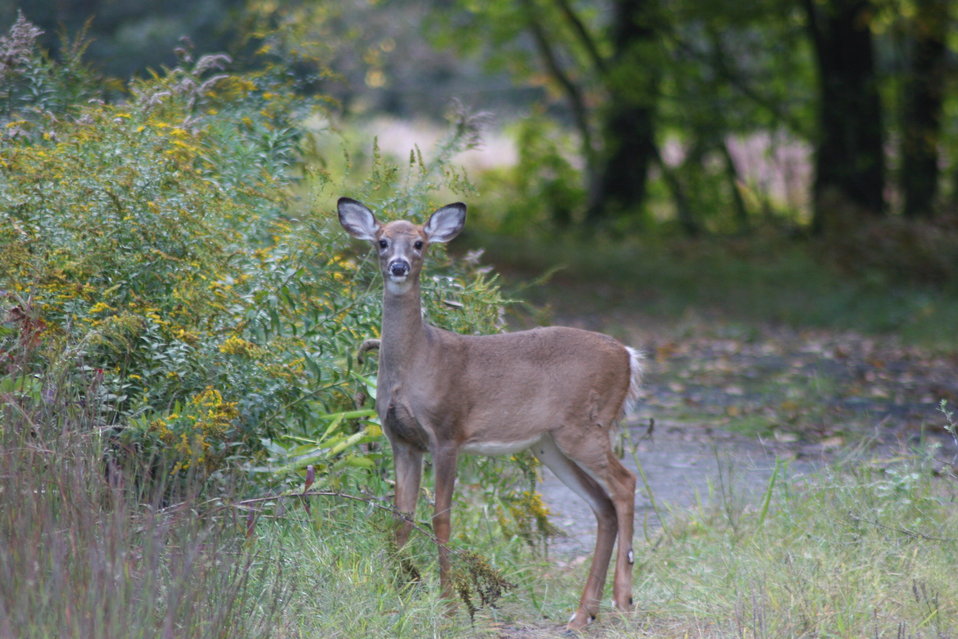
Yearling at Great Bay NWR

Yearling at Great Bay National Wildlife Refuge, Newington, NH.